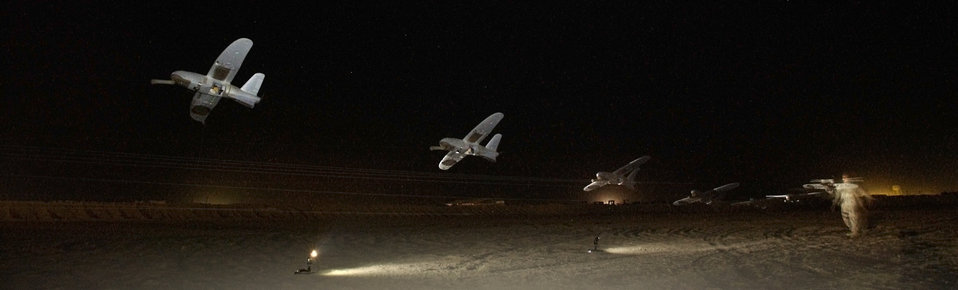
Hawk Take Off

TALLIL AIR BASE, Iraq -- Staff Sgt. Joesph Vialpando uses a bungee cord catapult to launch a Desert Hawk force protection airborne surveillance system aircraft for a night surveillance mission here Oct. 22. The seven-pound remote controlled, battery-powered aircraft can stay aloft for about an hour as it flies over the base transmitting imagery to its controlling laptop computer. Vialpando is deployed to the 332nd Expeditionary Security Forces Squadron.